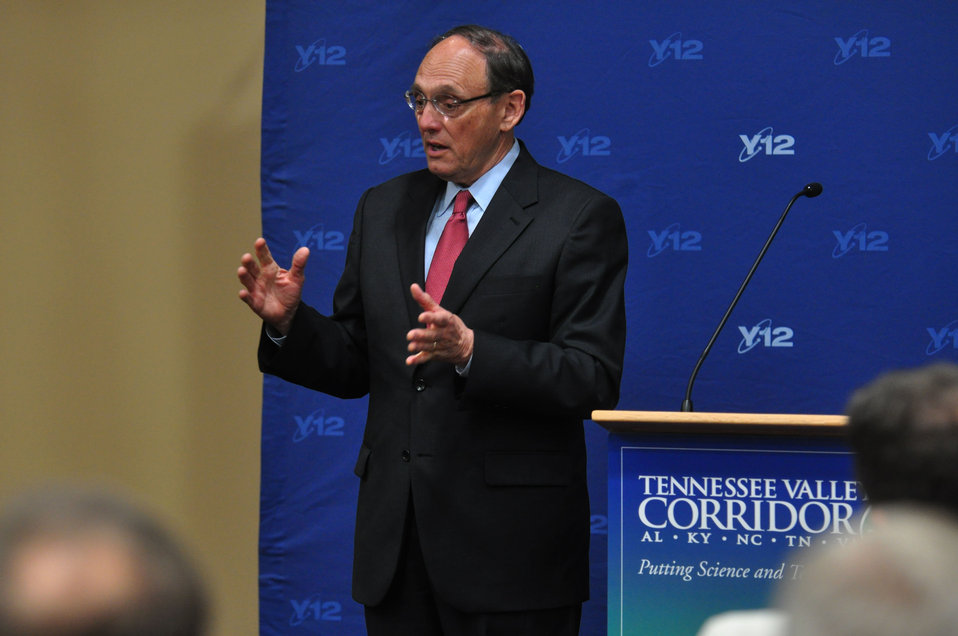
Congressman Phil RoeTennessee Valley Corridor Summit Oak Ridge

13-062 DOE photo Lynn Freeny 5-29-2013 Oak Ridge Tennessee